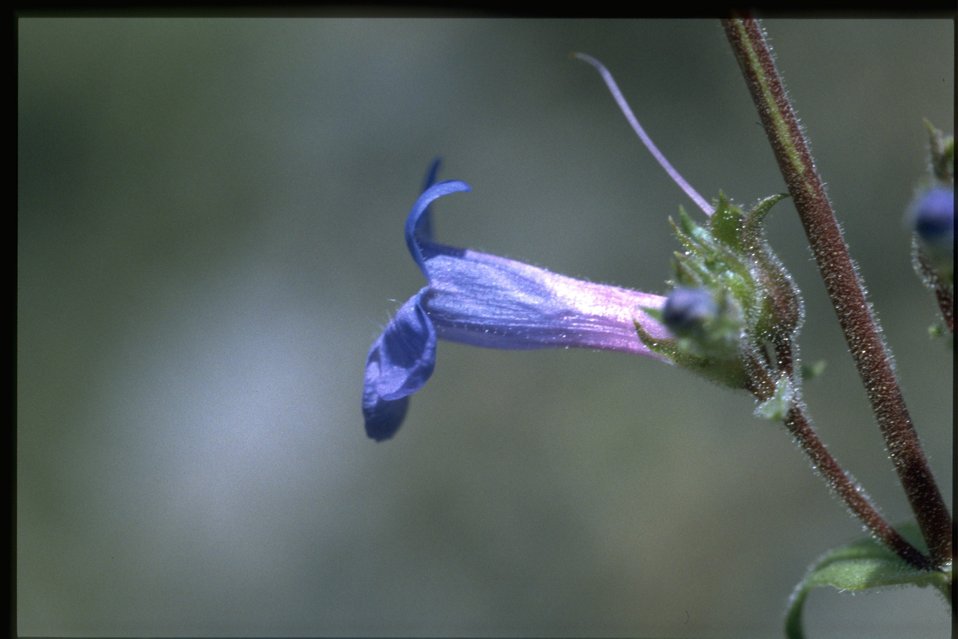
Closeup shot of low beardtongue (Penstemon humilis).